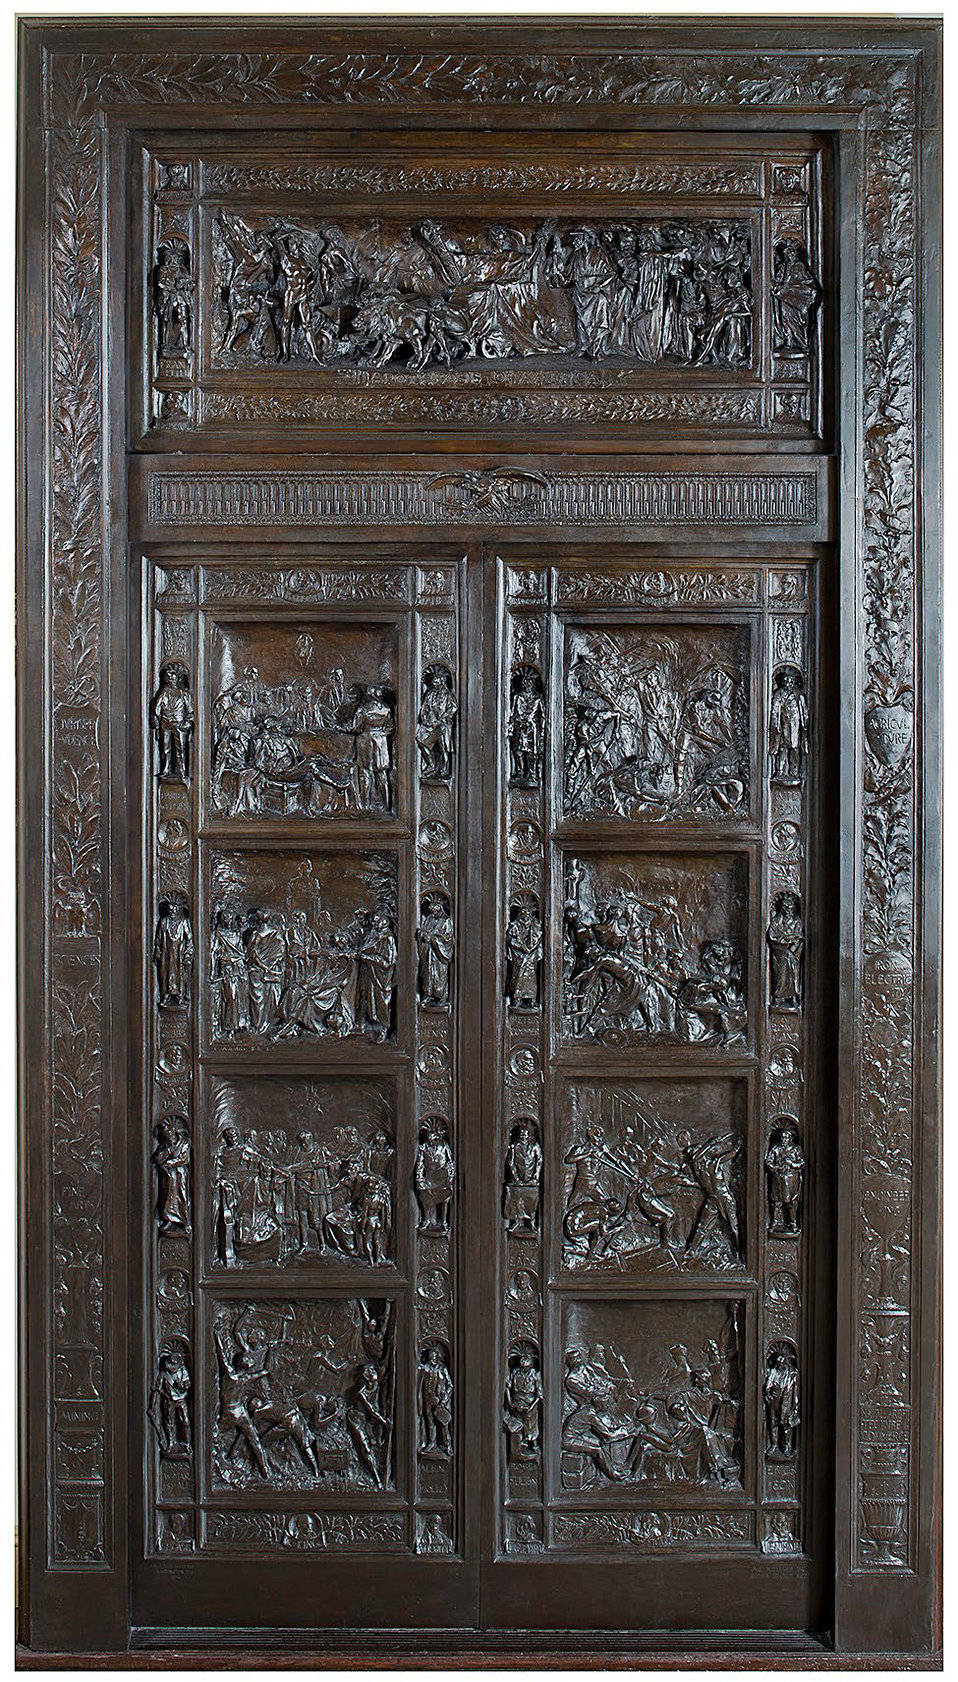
The Amateis Doors

Bronze by Louis Amateis, 1908. Located in the House Wing of the U.S. Capitol.